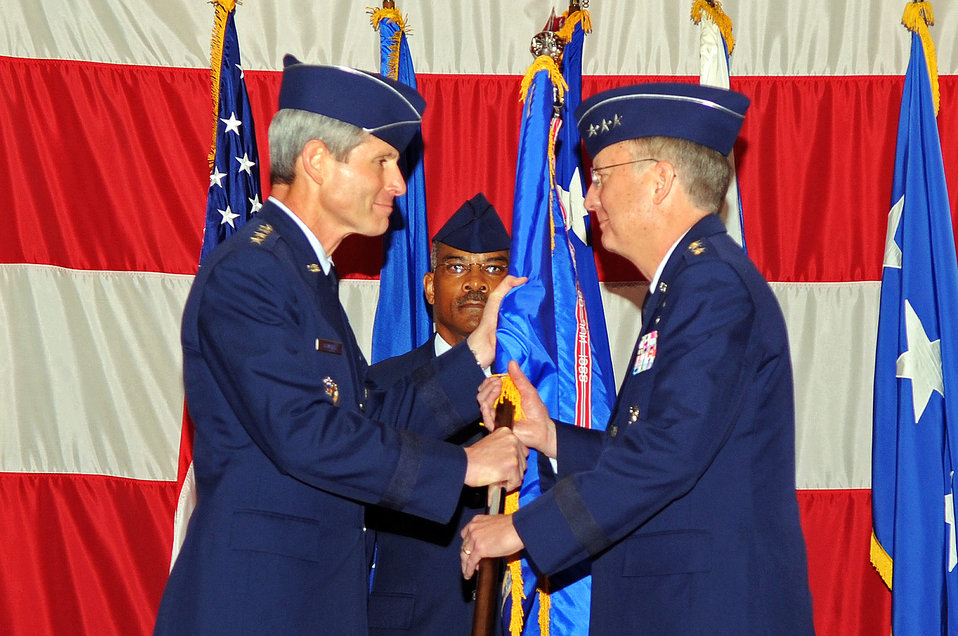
Air Force Global Strike Command activated

Air Force Chief of Staff Gen. Norton Schwartz passes the Air Force Global Strike Command guidon to Lt. Gen. Frank G. Klotz, commander, during the activation ceremony of the major command Aug. 7 at Barksdale Air Force Base, La. The AFGSC will provide combat ready forces to conduct strategic nuclear deterrence and global strike operations in support of combatant commanders.